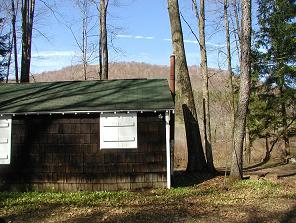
The back of a private cabin in Western PA. Photo taken by Josh Cradduck in 2005 (Wikipedia User). The image is hereupon released into the public domain and may hereafter be used without permission.